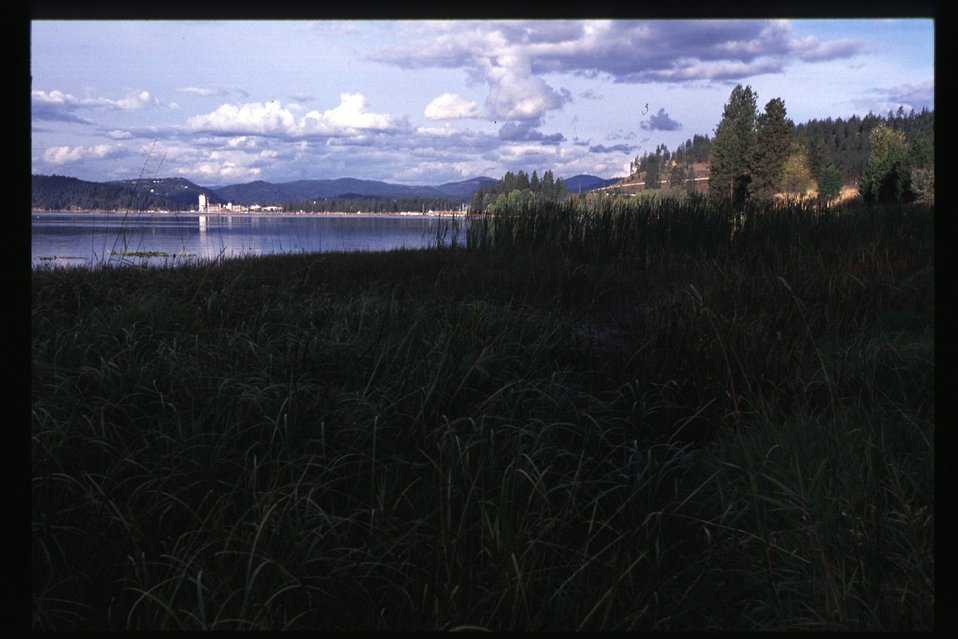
Scenic Cougar Bay Couer d'Alene Field Office UCSC Upper Columbia Salmon Clearwater District